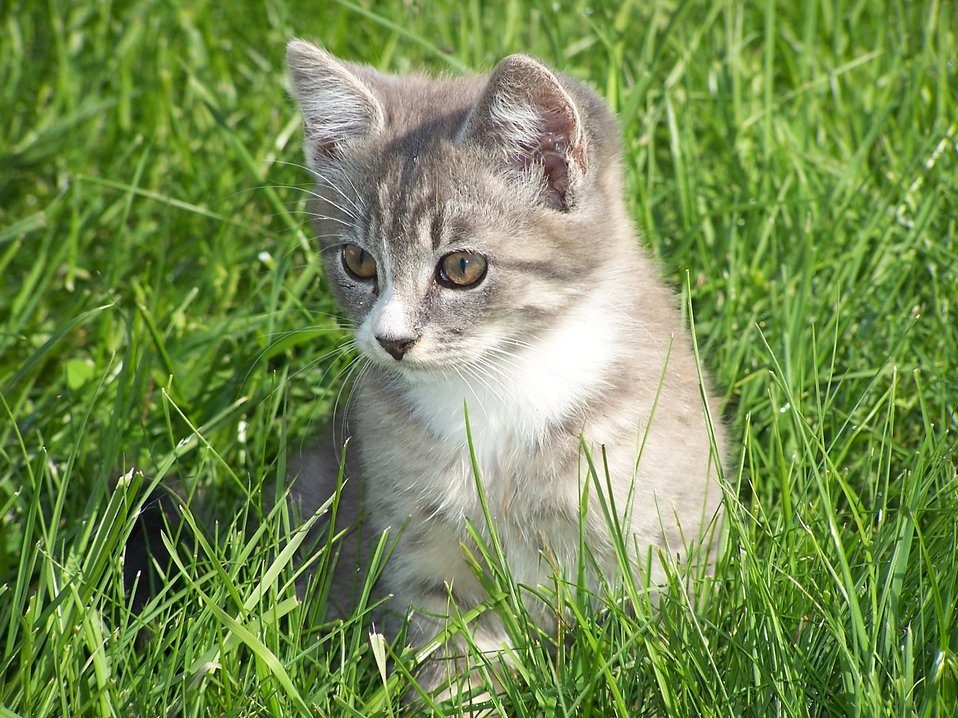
Kitty cat

Cat sitting in grass.